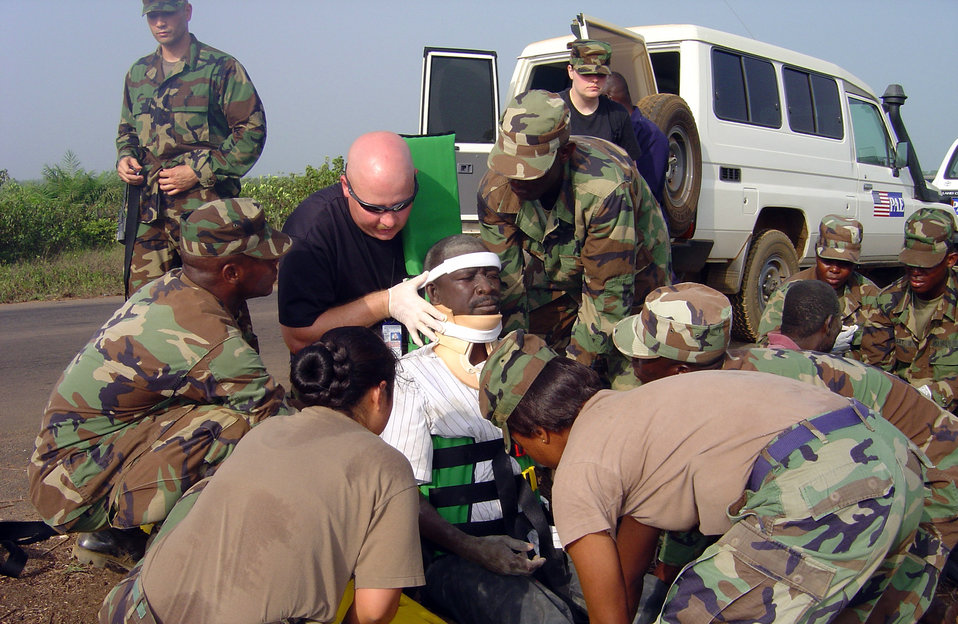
USAFE, Liberian medics team up to save lives

Senior Master Sgt. Daryl Webb (in sunglasses) and Tech. Sgt. Elizabeth Burrell (in a black T-shirt) join members of the Armed Forces of Liberia in stabilizing a victim from an auto accident in January in Liberia. The Airmen are medics with U.S. Air Forces in Europe from Ramstein Air Base, Germany. The Armed Forces of Liberia medical technicians had just completed two days of medical training by USAFE Airmen.